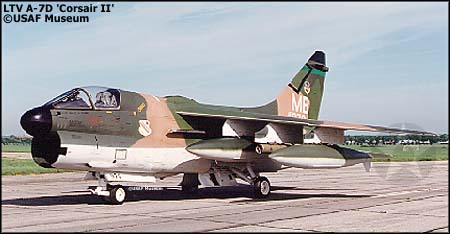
A-7D Corsair II

1960's -- The A-7D is a single-seat, tactical close air support aircraft. Although designed primarily as a ground attack aircraft, it also has limited air-to-air combat capability. It was derived from the basic A-7 originally developed for the U.S. Navy. The first A-7D made its initial flight on April 5, 1968, and deliveries of production models began on Dec. 23, 1968. When A-7D production ended in 1976, 459 had been delivered to the U.S. Air Force.